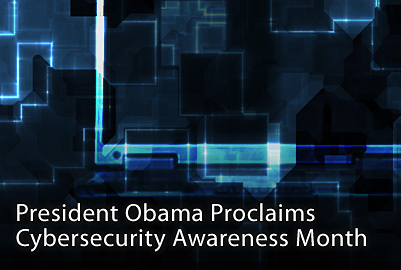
President Obama proclaims Cybersecurity Awareness Month